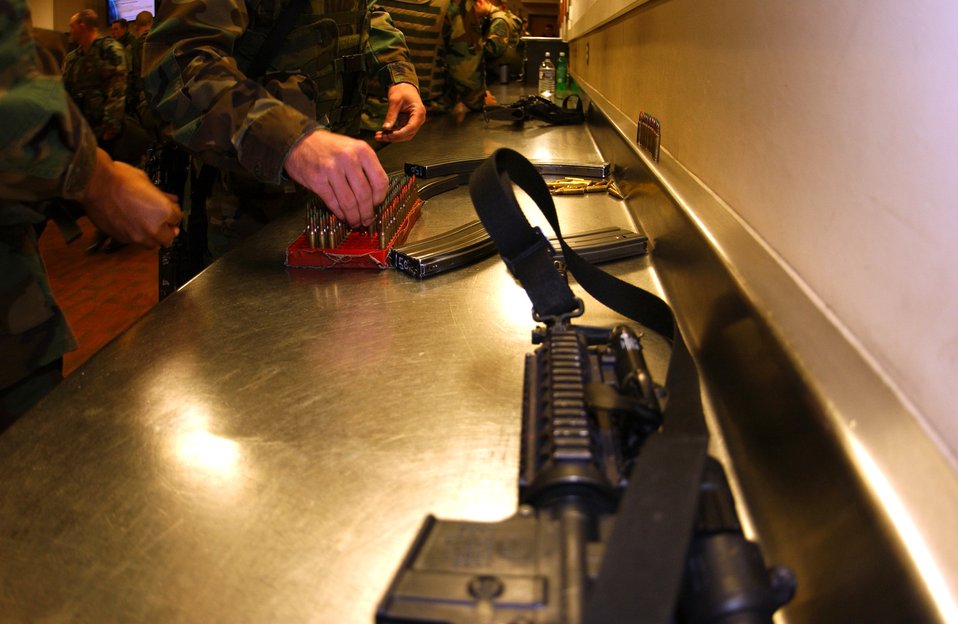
Shift change

Airmen from the 5th Security Forces Squadron at Minot Air Force Base, N.D., block their ammunition after their shift Friday, April 21, 2006. This procedure ensures accountability for all issued ammunition.